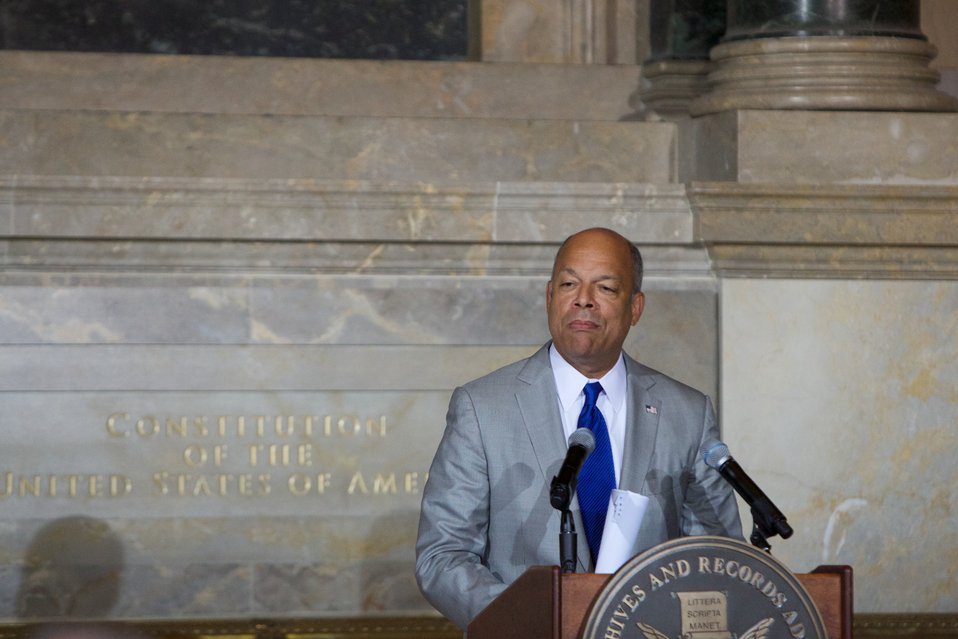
Naturalization Ceremony with Michelle Obama